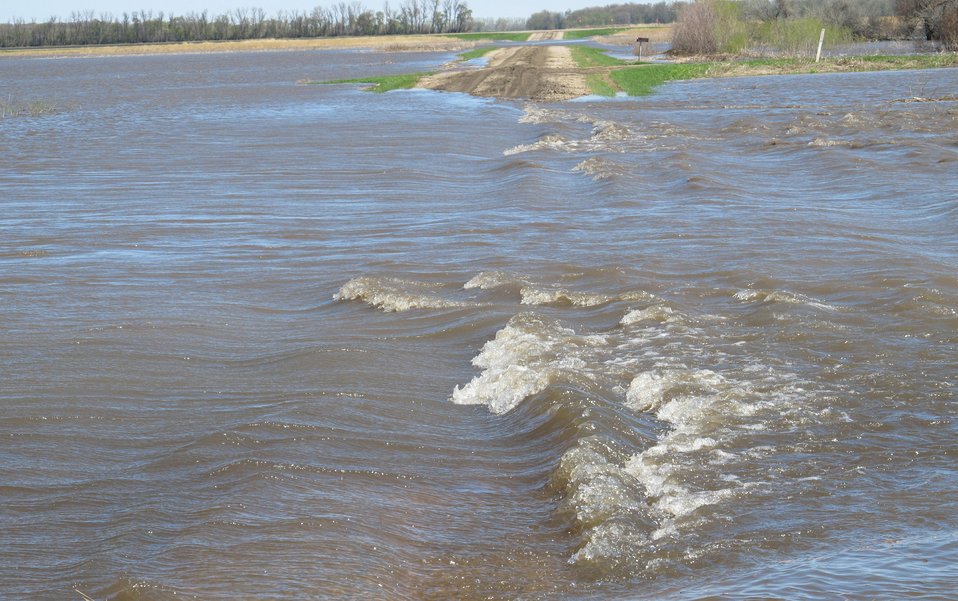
Flooding and water damage in the Park and Tongue River Watersheds located in Cavalier, Pembina and Cavalaier Counties in North Dakota on Thursday, May 23, 2013.